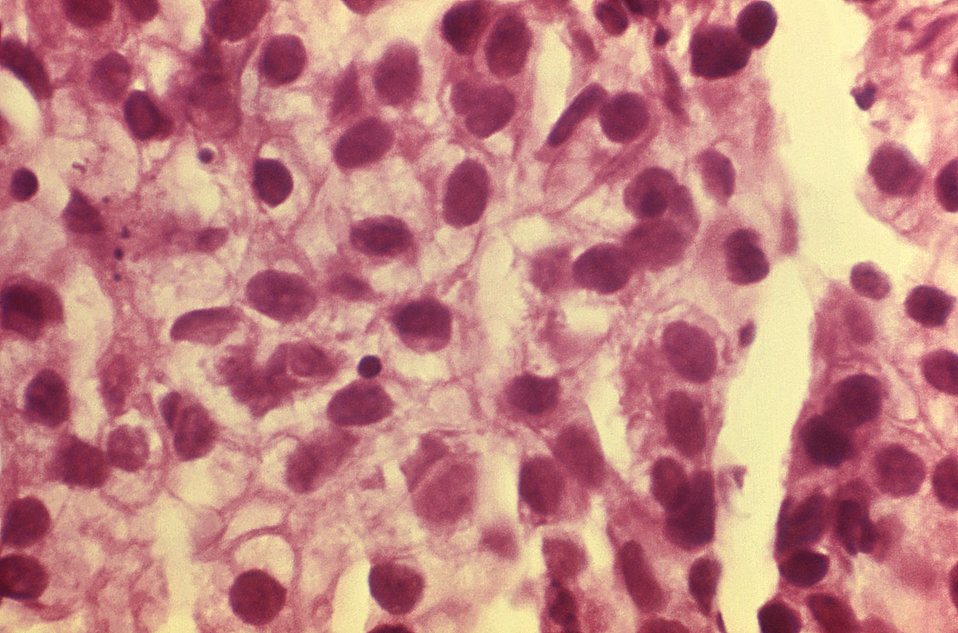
Under a magnification of 1000X, this hematoxylin-eosin (H&E) stained photomicrograph reveals some of the ultrastructural histopathologic changes found in a vaginal tissue biopsy specimen indicative of adenocarcinoma of the vagina. In this case, involving a teenage girl, it was believed that the onset of this cancer may have been due to the fact that the patient's mother had taken diethylstilbestrol (DES) while pregnant, as a treatment to avoid a possible spontaneous abortion.